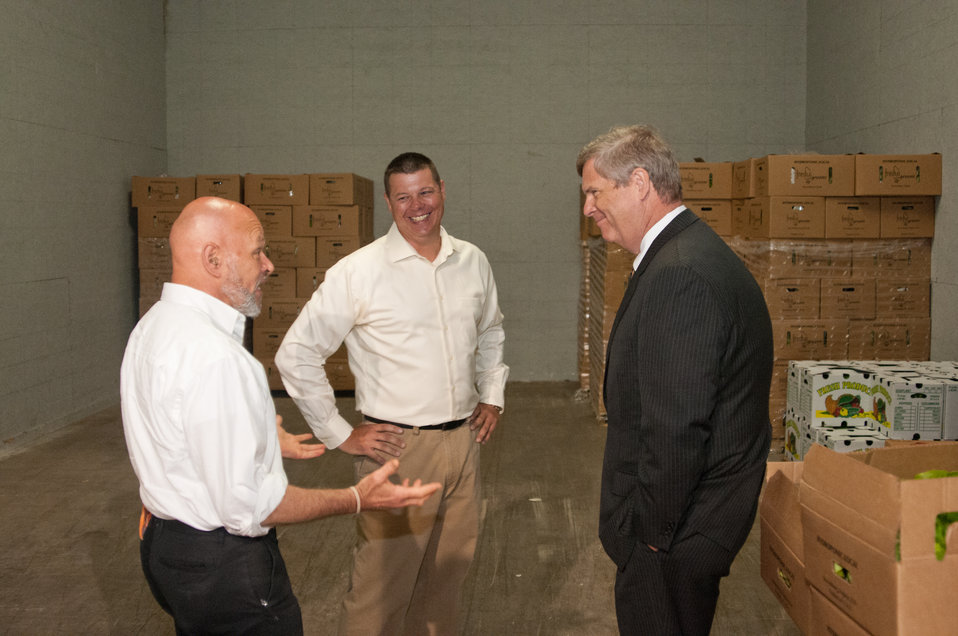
Agriculture Secretary Tom Vilsack visits Blue Ridge Produce in Elkwood, VA on Thursday, May 30, 2013. Blue Ridge Produce is a local food hub aggregating Virginia-grown fruits and vegetables for sale to wholesale customers in the Capitol region. Blue Ridge strives to build a value-based relationship with Virginia growers of all sizes by handling the marketing and logistics to get their produce from farm to customer. (L to R Blue Ridge Produce Jim Epstein, Blue Ridge Produce Mark Seale, and Agriculture Secretary Tom Vilsack).